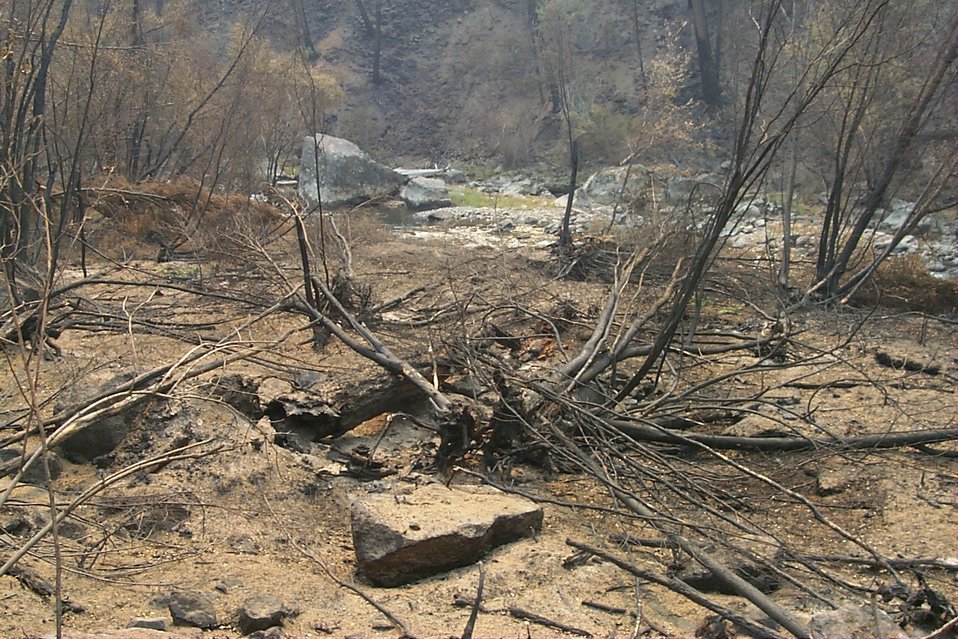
Burn area Fire Clearwater Fire Salmon Field Office USRD Upper Snake River District